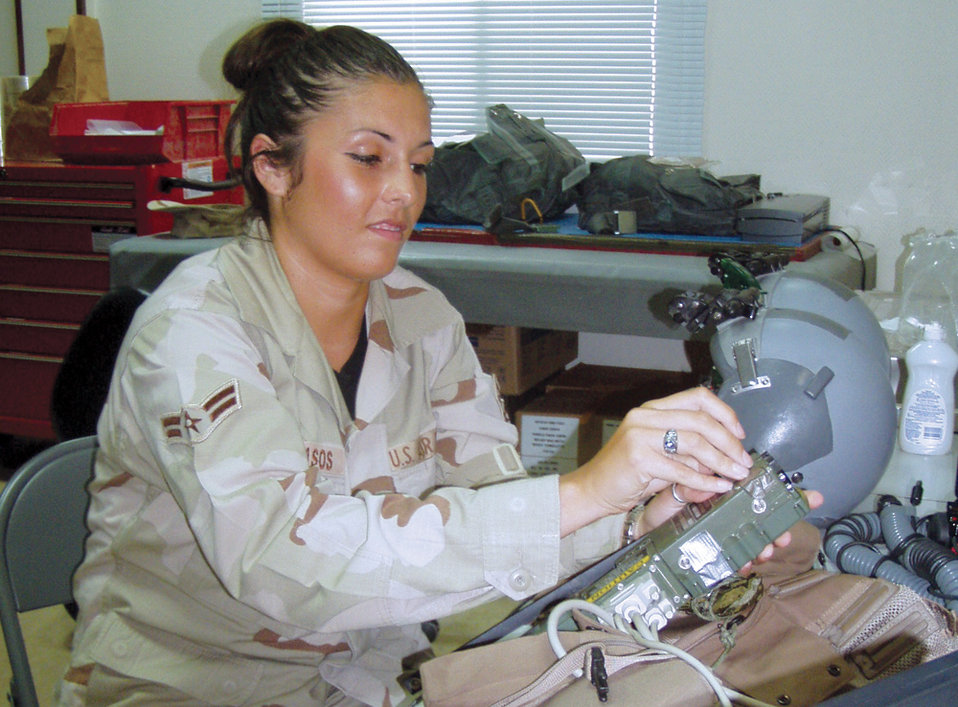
Airman's life-altering decision takes turn for the better

SOUTHWEST ASIA -- Airman 1st Class Shannon Cavasos loads frequencies into radios used to assist downed aircrews who must survive on the ground until search-and-rescue support arrives. She is a life-support technician with the 494th Expeditionary Fighter Squadron at a forward-deployed location and is from Royal Air Force Lakenheath, England.